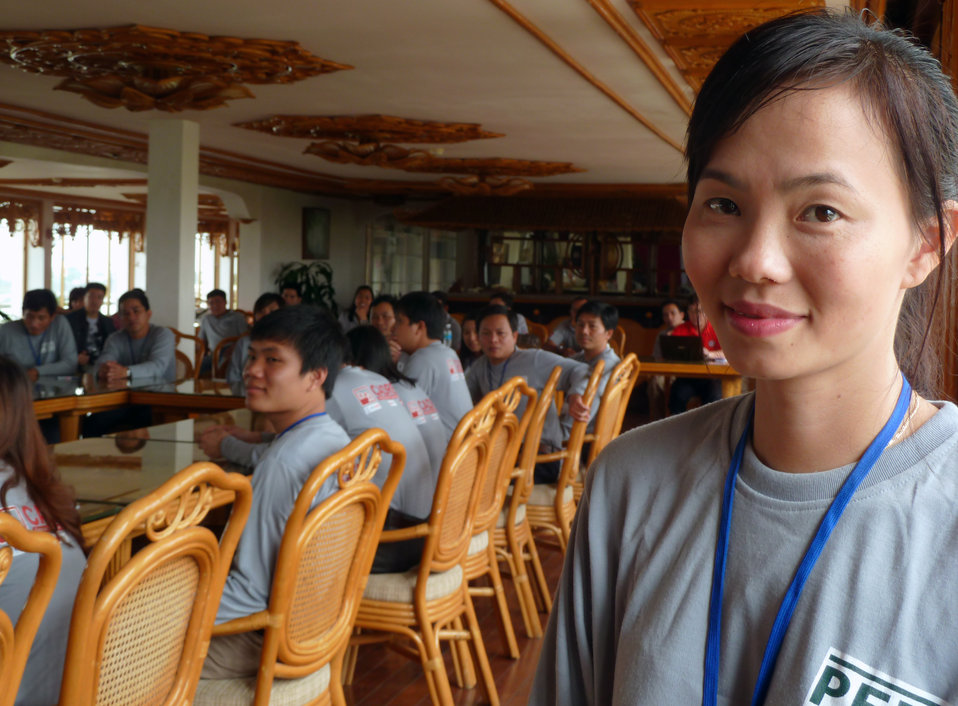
Disaster and Emergency Training Funded by USAID in Hue, Vietnam